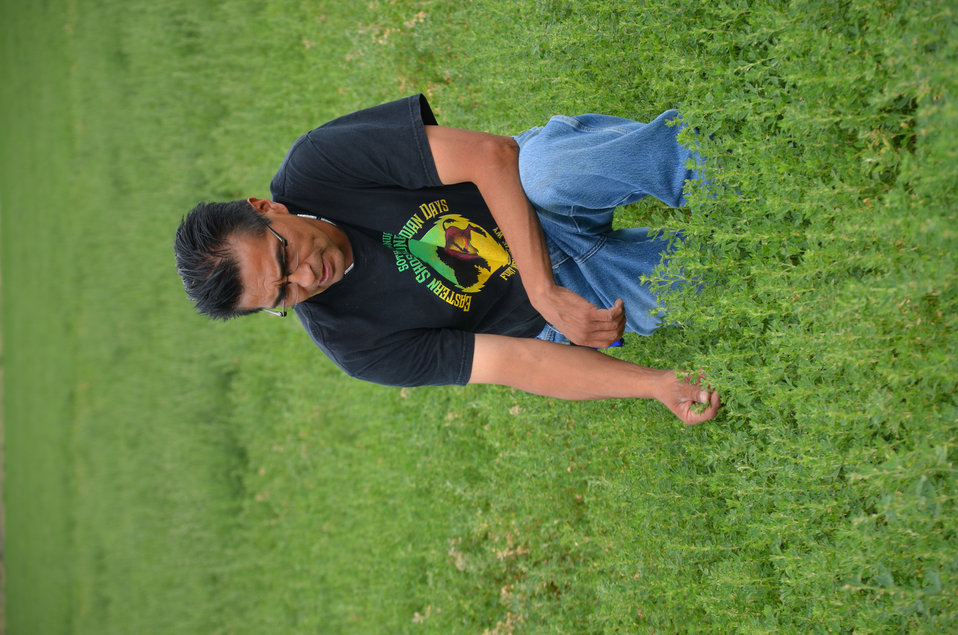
Strike Force Ranch 3

Shoshone-Paiute Tribal member Reggie Premo utilizes conservation practices such as land leveling and water irrigation pipeline on his commercial alfalfa fields. Premo obtained financial assistance on conservation practices through the U.S. Department of Agriculture (USDA) StrikeForce for Rural Growth and Opportunity program.